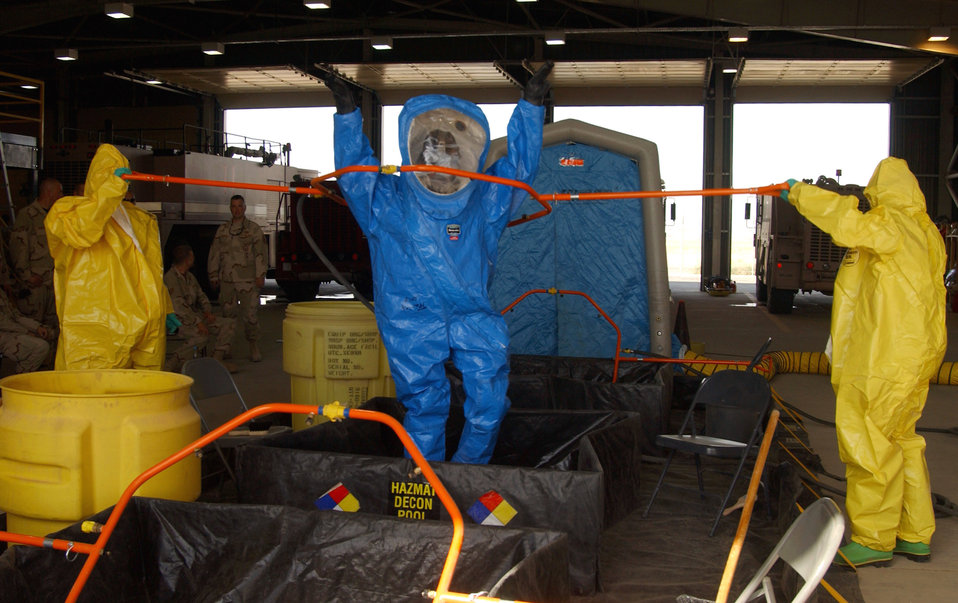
Hazmat training in Iraq

Army Spc. Michael Harms (left) and Airman 1st Class Jace Correa, in yellow Level B suits, raise and lower a decontamination shower ring as Airman 1st Class Glenn Rodgers, in a blue Level A suit, simulates a contaminated firefighter during a training exercise June 5 at Balad Air Base, Iraq. The firefighters set up a hazardous-material decontamination line and practiced so that they would be able to quickly respond to any real-world threat within 10 minutes. The servicemembers are firefighters with the 332nd Expeditionary Civil Engineer Squadron Fire and Emergency Services Flight.